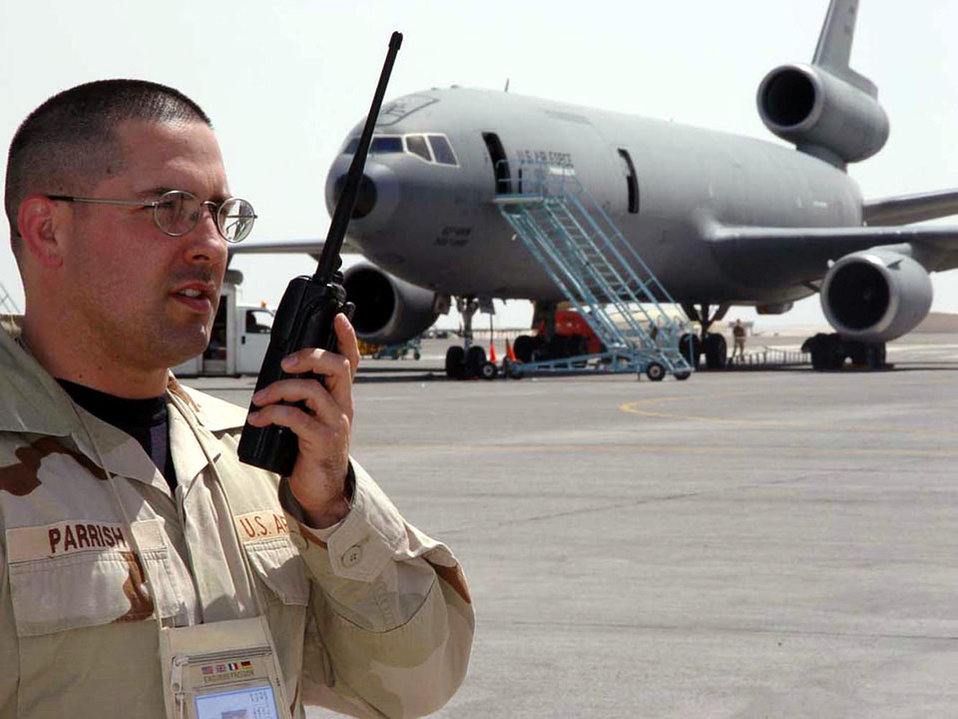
Airfield management

OPERATION IRAQI FREEDOM -- Tech. Sgt. Scott Parrish radios for maintenance assistance during a routine inspection on the flightline at a forward-deployed location. Parrish is chief of airfield management for the 380th Operations Support Squadron and deployed from Altus Air Force Base, Okla.